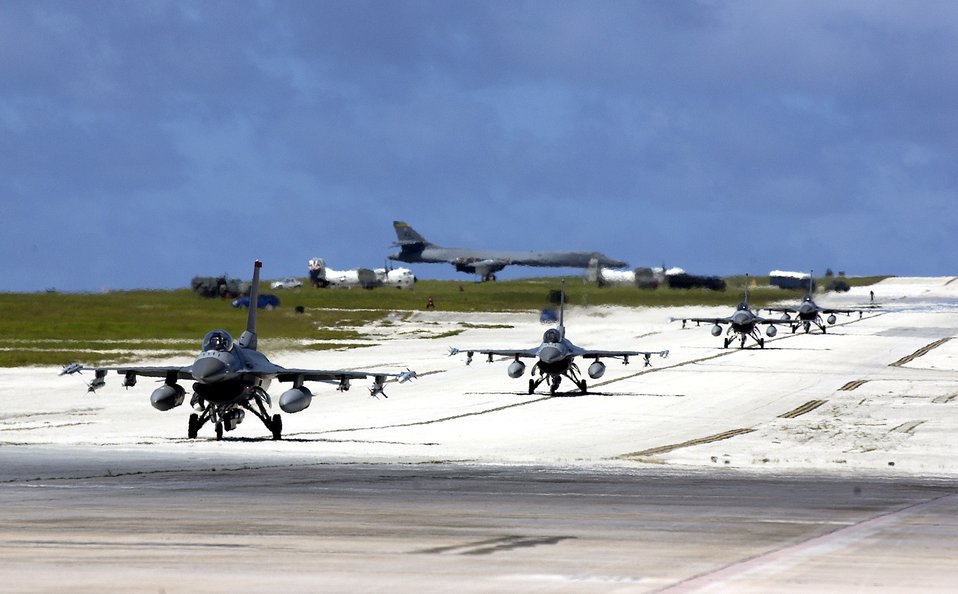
Valiant Shield kicks off

Four F-16 Fighting Falcons taxi at Andersen Air Force Base, Guam, on Monday, June 19, after a training mission for Exercise Valiant Shield 2006. Valiant Shield focuses on integrated joint training and interoperability among U.S. military forces while responding to a range of mission scenarios. The F-16s are with the 13th Fighter Squadron at Misawa Air Base, Japan.